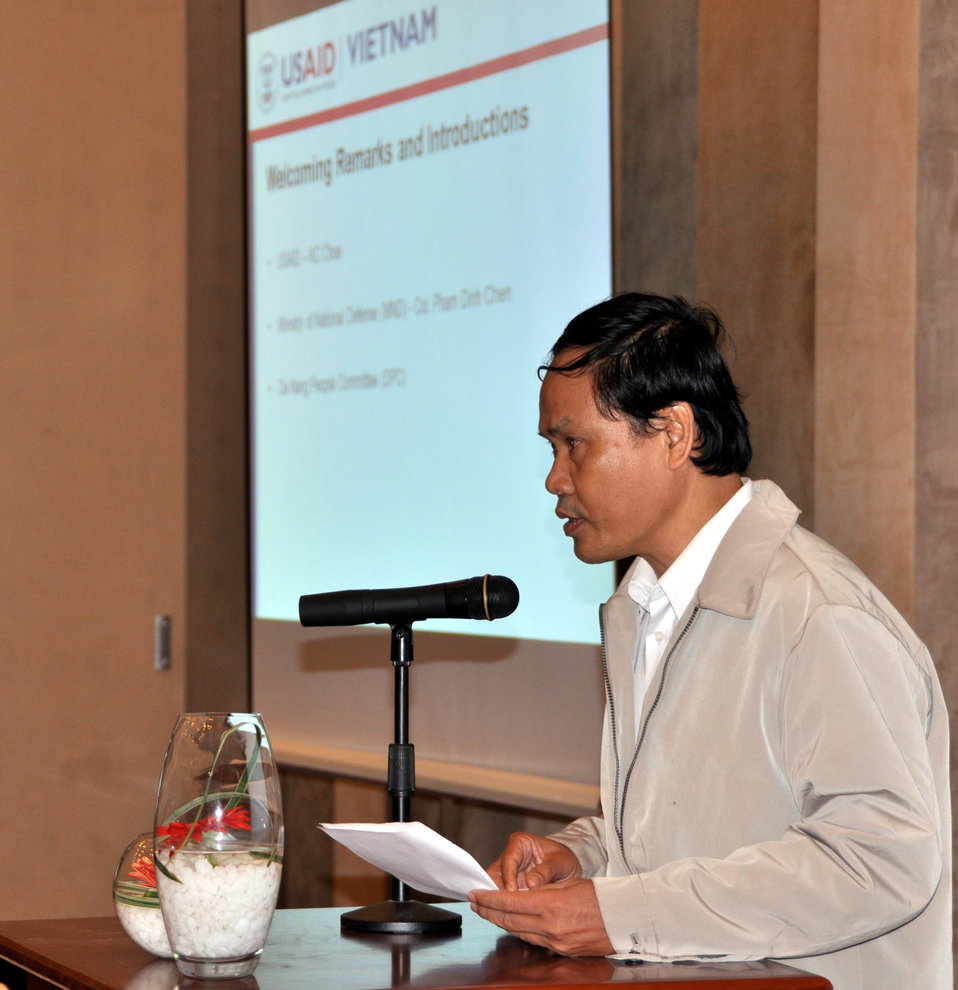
Mr. Nguyen Dinh Anh, vice director of the Danang Department of Natural Resources and Environment, Addresses the Danang Stakeholder Meeting

Environmental Remediation of Dioxin Contamination at Danang Airport

Danang, Vietnam
January 23, 2013
Photos @USAIDVietnam